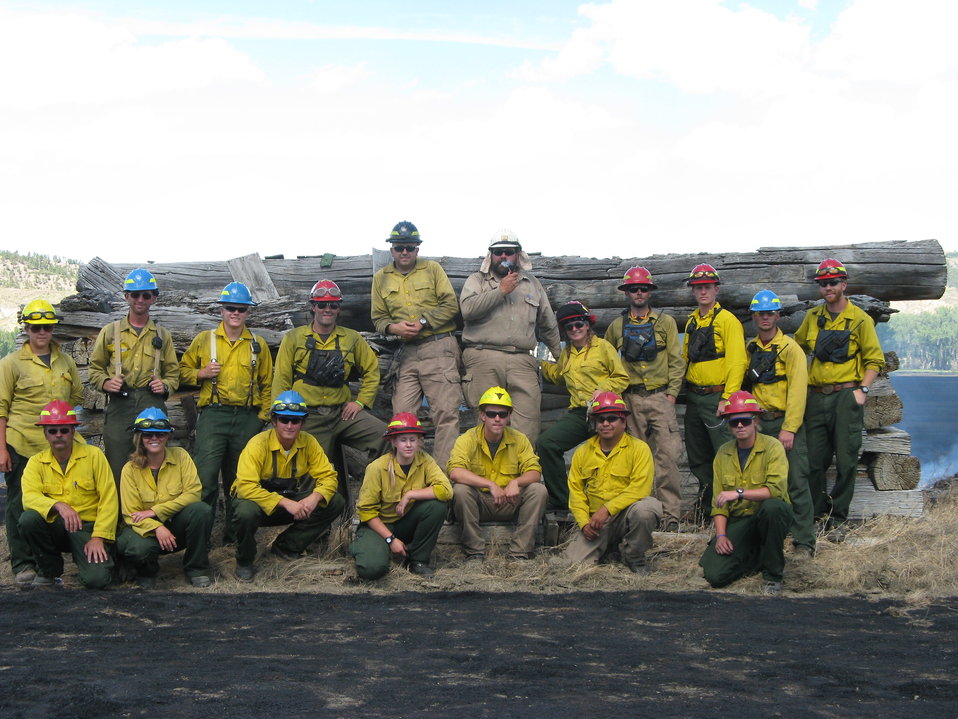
Fire Crew

The Charles M. Russell National Wildlife Refuge fire crew after successfully completing a prescribed burn on the refuge.